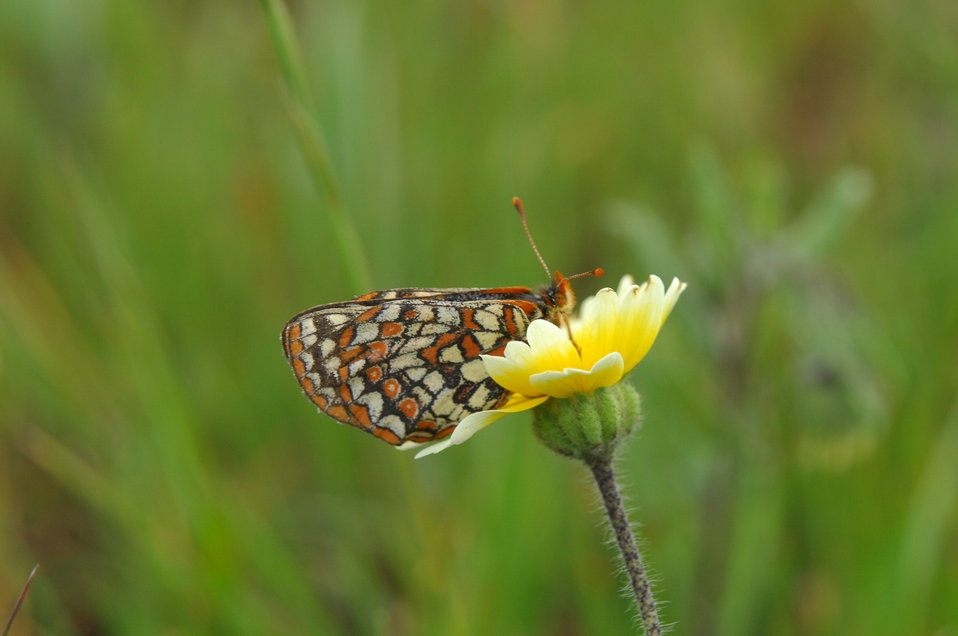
Bay checkerspot